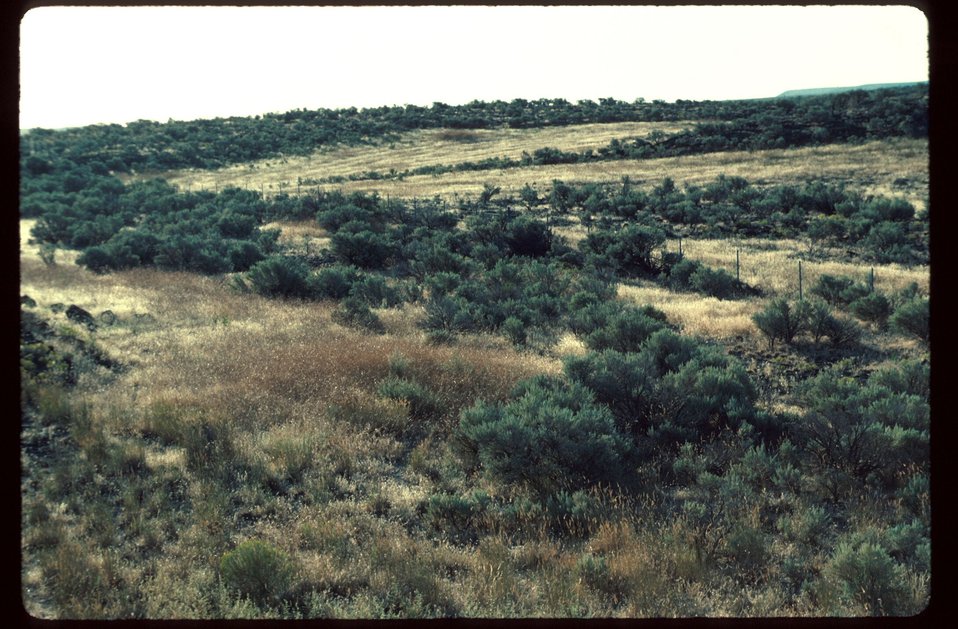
Range Restoration Project